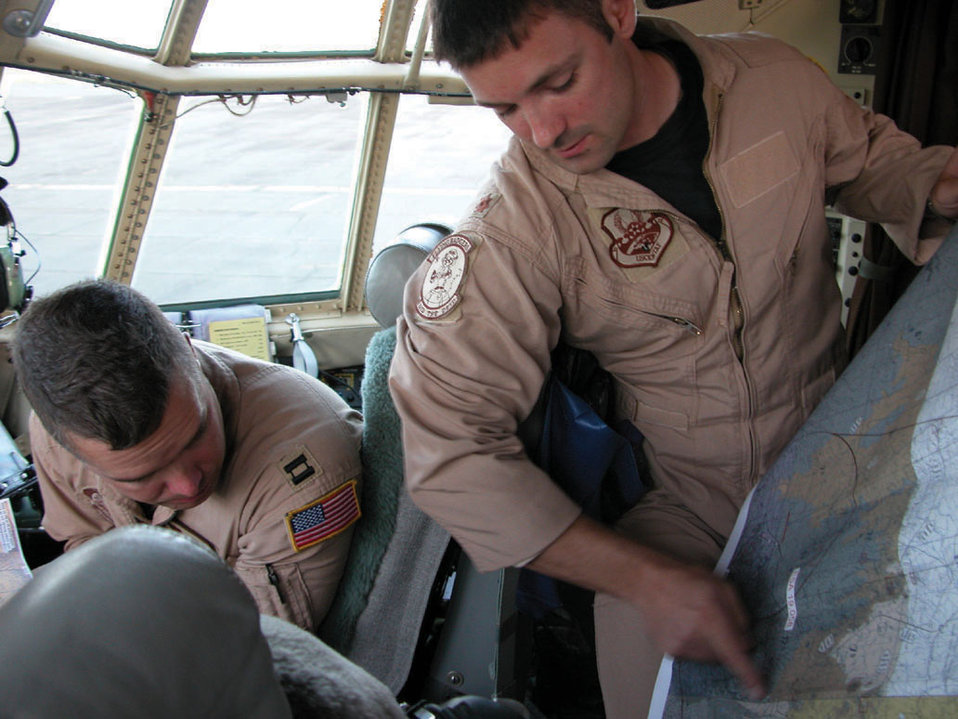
Airmen join Soldiers taking Kenya military to new heights

KENYA -- Maj. David. Belfiore reviews chart data with Capt. Brad James before an airdrop June 6. More than 140 U.S. and Kenyan Army paratroopers left the Kenyan army base landing strip and made successful jumps during the three-day, 14-drop mission. Both Airmen are assigned to the 746th Air Expeditionary Squadron at a forward-deployed location.